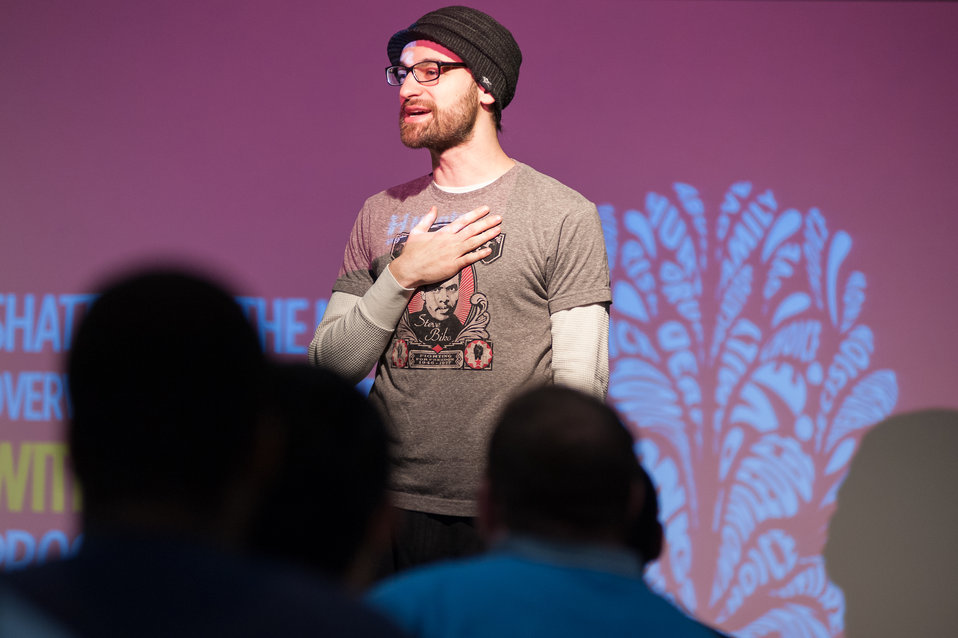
Mentor NDFW Event 2014

Mentor Foundation USA, in partnership with the National Institute on Drug Abuse (NIDA) and other key partners hosted a Youth Drug Facts Rally at the House of Sweden on Thursday, 30th January 2014. Approximately 200 students from five local high schools attended and had the opportunity to interact with top U.S. scientific experts, and inspiring guest speakers to “shatter the myths” about drugs and substance abuse, while pledging to stay drug-free.